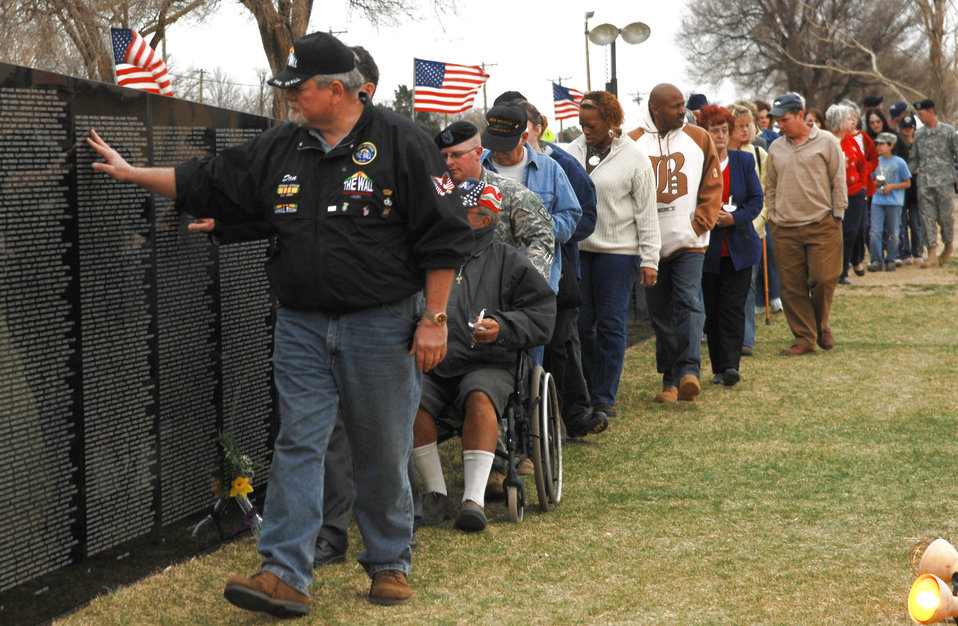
Traveling Vietnam Wall arrives in Clovis

Veterans and town residents in Clovis, N.M., the home of Cannon Air Force Base, view the traveling Vietnam Wall March 15 to honor the memories of those who gave their lives during the Vietnam War. The Wall is transported around the country to give people who otherwise may not be able to make the trip to Washington D.C. the opportunity see the Wall in their home town and pay their respects. The Wall was on display in Clovis from March 14 to 18.